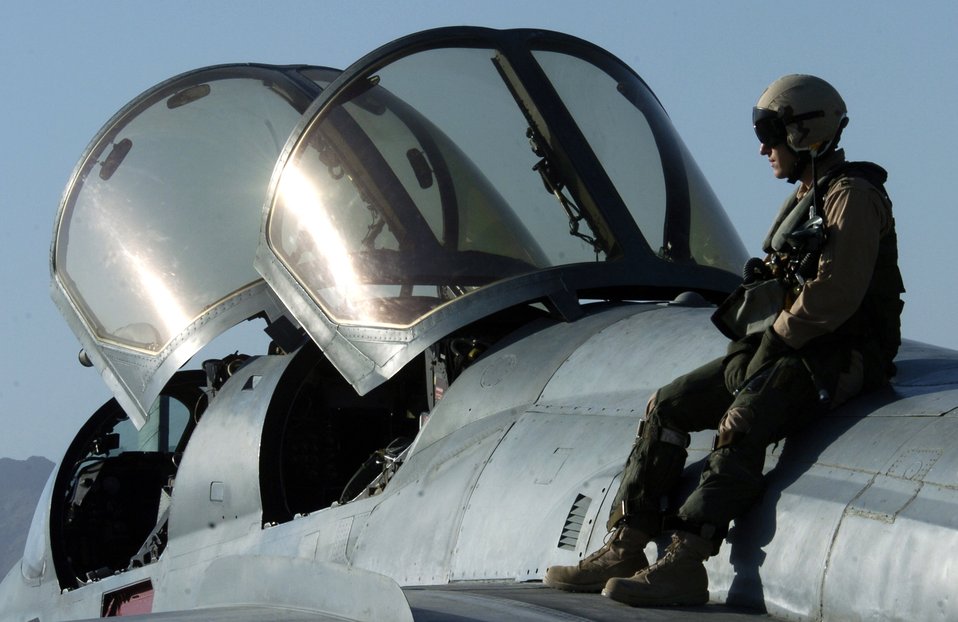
On the prowl

Air Force Capt. Matthew Polus sits on a Navy EA-6B Prowler before takeoff from Bagram Air Base, Afghanistan, on Thursday, June 15. Captain Polus is an electronic countermeasures officer with the Electronic Attack Squadron 133 Wizards. Air Force and Navy crewmembers fly the Prowler, providing support to ground troops in Afghanistan.